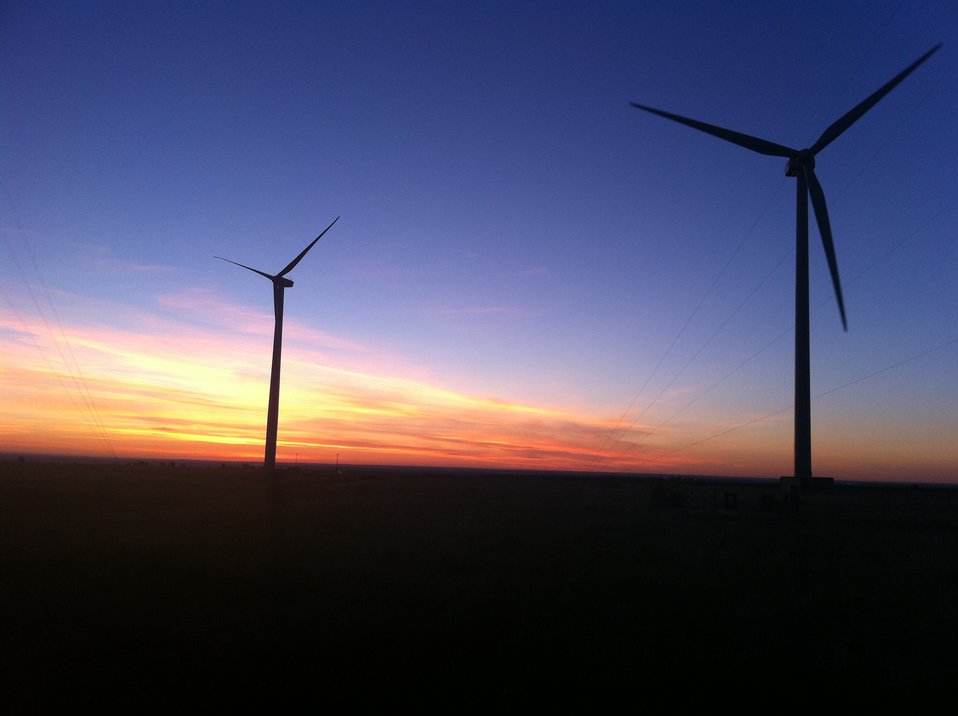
Wind turbine at NREL's National Wind Technology Center (NWTC) at sunrise.